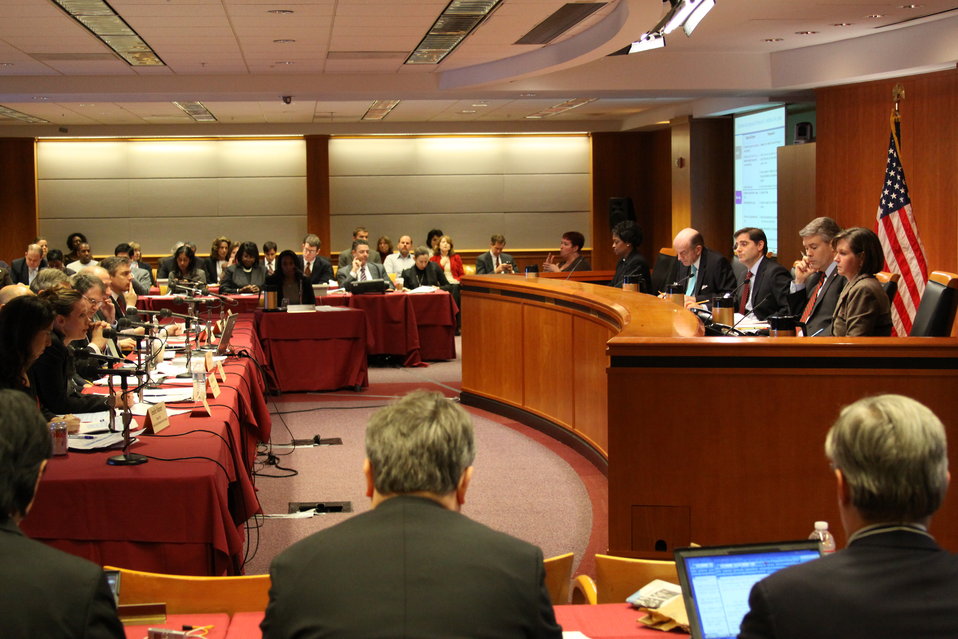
December Commission Meeting